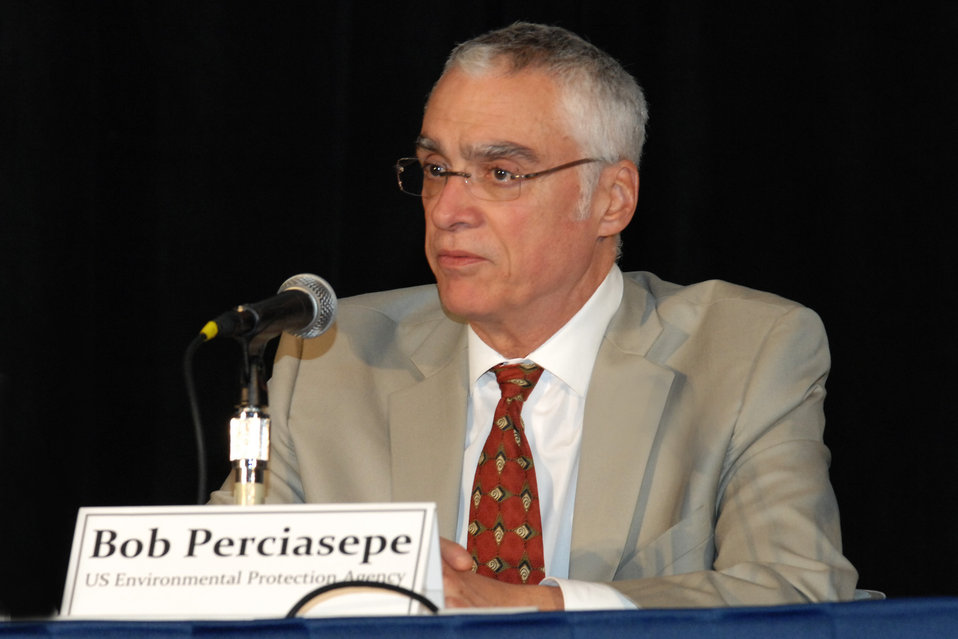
Deputy Administrator Perciasepe at Climate Change Summit

US EPA Deputy Administrator Bob Perciasepe participates in a panel at the Southeast Florida Regional Climate Leadership Summit in Fort Lauderdale, Florida